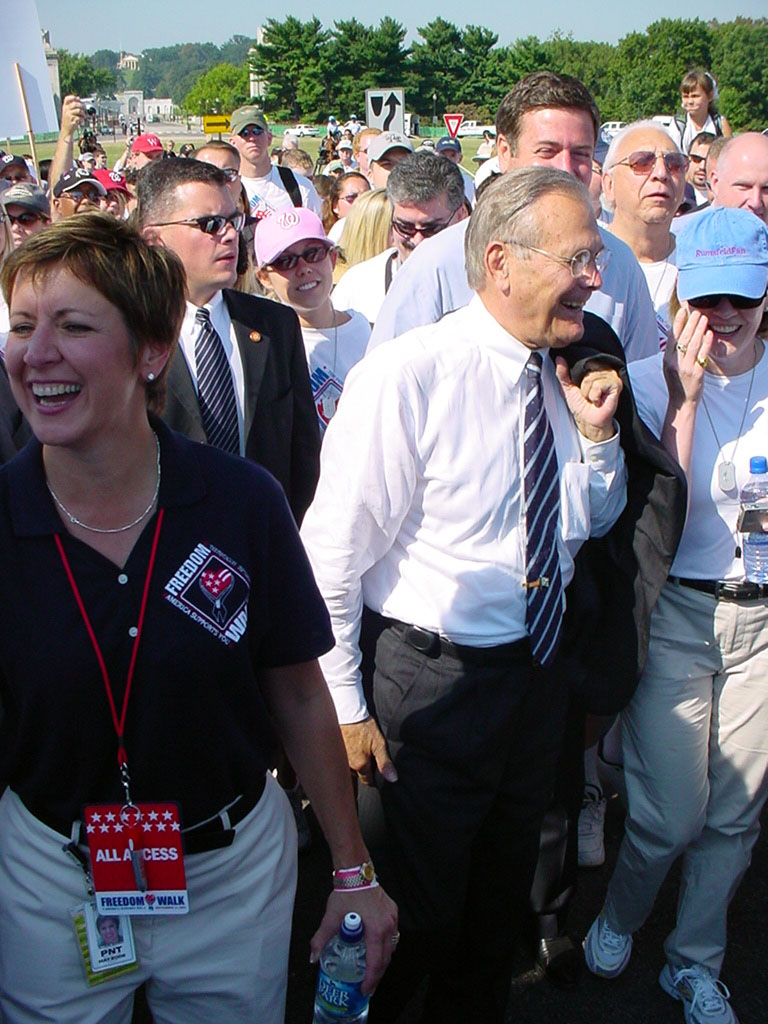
Freedom Walk

WASHINGTON - Secretary of Defense Donald H. Rumsfeld was among thousands of people who participated in the first